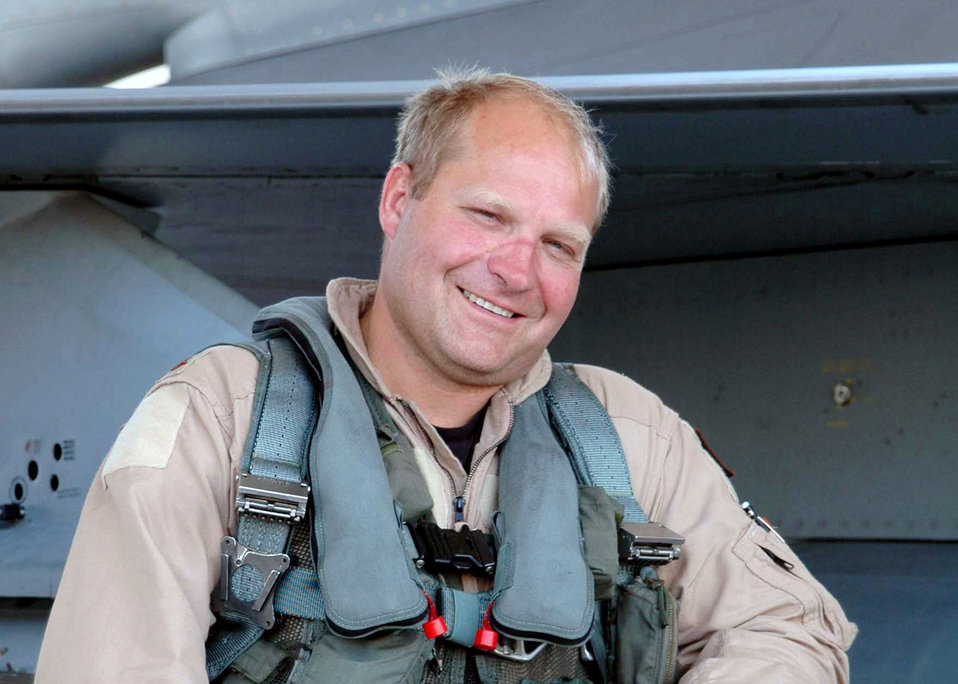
Operation Iraqi Freedom

Pictured in 2005, Maj. Kevin Sonnenberg of the Ohio Air National Guard's 112th Fighter Squadron stands beside his F-16 Fighting Falcon after flying a sortie. Major Sonnenberg, 42, of McClure, Ohio, was killed in action June 15 when his F-16 crashed five miles northwest of Balad Air Base, Iraq.